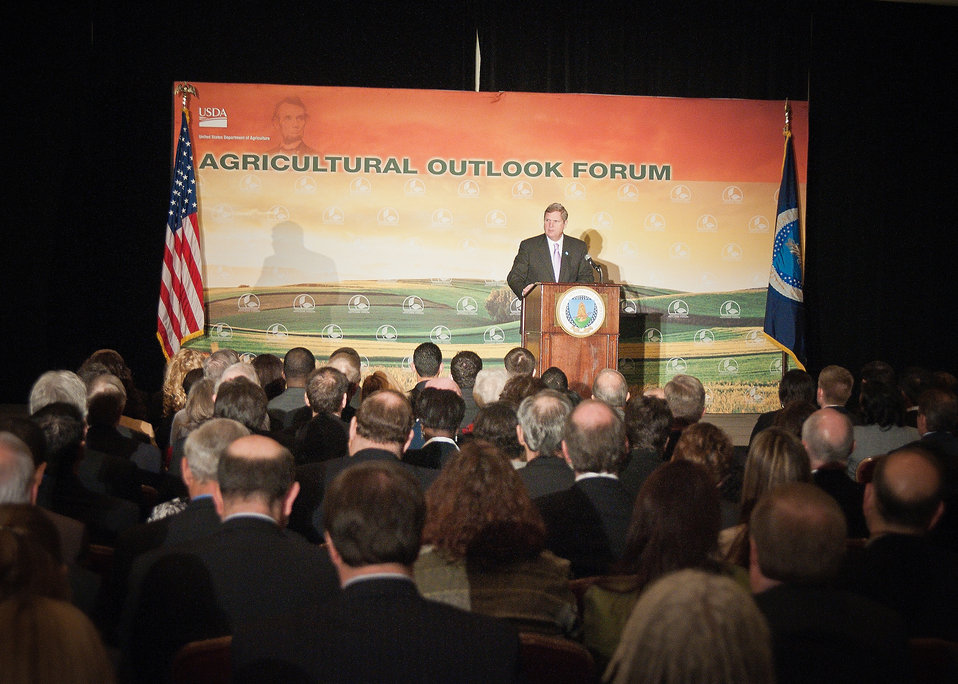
At the 2012 Agricultural Outlook Forum, “Moving Agriculture Forward” in Arlington, VA, held on Thursday, February 23, 2012. Agriculture Secretary Tom Vilsack makes opening remarks at the conference.